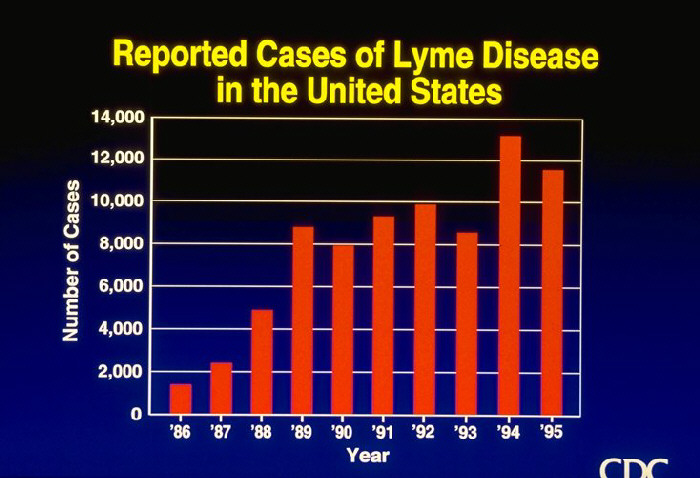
Reported Cases of Lyme Disease in the United States (graph)